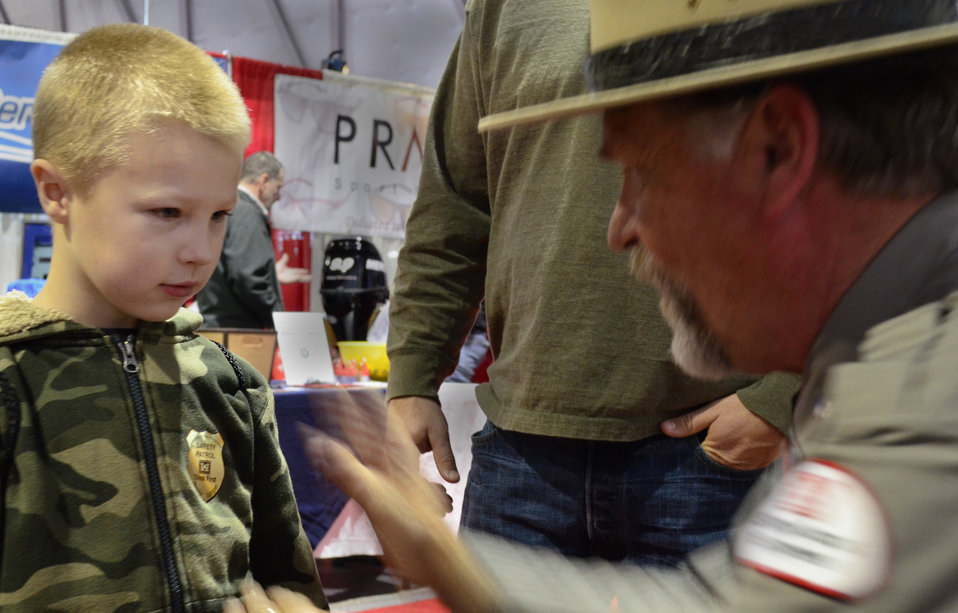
Sharing water safety tips at International Sportsmen's Expo in Sacramento

Jerry Magnuson of the U.S. Army Corps of Engineers Sacramento District presents a junior ranger badge to a young attendee at the International Sportsmen’s Expo, Jan. 11, 2012, in Sacramento, Calif. Magnuson is park manager at Eastman Lake near Raymond, Calif. The expo continues through Jan. 13.